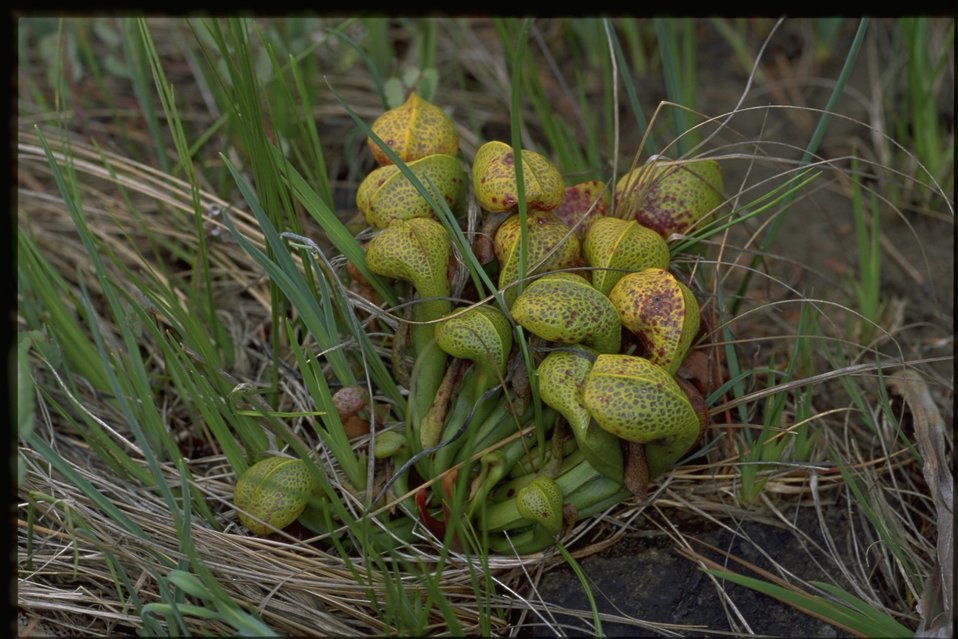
Medium shot of Cobra Lily, Darlingtonia californica.